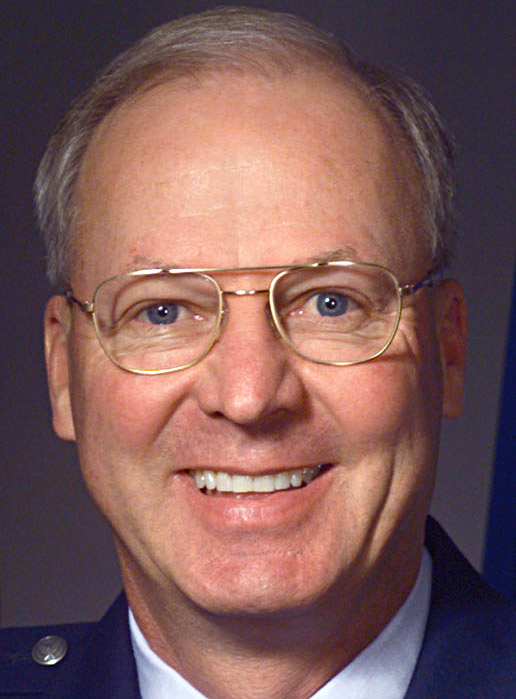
Gen. McKinley approved to lead Guard Bureau

Lt. Gen. Craig R. McKinley was confirmed as the 26th chief of the National Guard Bureau by the Senate Oct. 2 in Washington, D.C. He is scheduled to become the first four-star general in the nearly 372-year history of the National Guard.